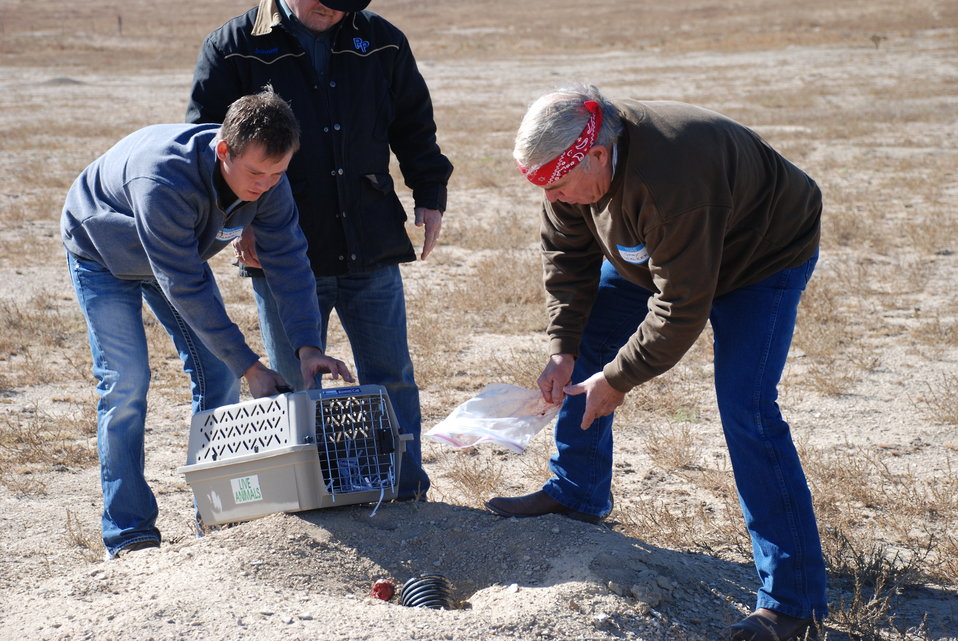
Black-footed Ferret Release

On Wednesday, October 30, 2013, thirty endangered black-footed ferrets were released onto cattle rancher Gary Walker's land, west of Pueblo, Colorado.

The release launched a potentially new way of preserving endangered species and was accomplished by way of a Safe Harbor Agreement (SHA). This SHA provides opportunities for private and Tribal landowners to volunteer their lands for reintroductions of this endangered species without affecting their land-use activities beyond mutually agreed-upon measures. It also extends these assurances to surrounding non-participating lands and other landowner interests. This SHA will be an important step in promoting the recovery of this iconic species.